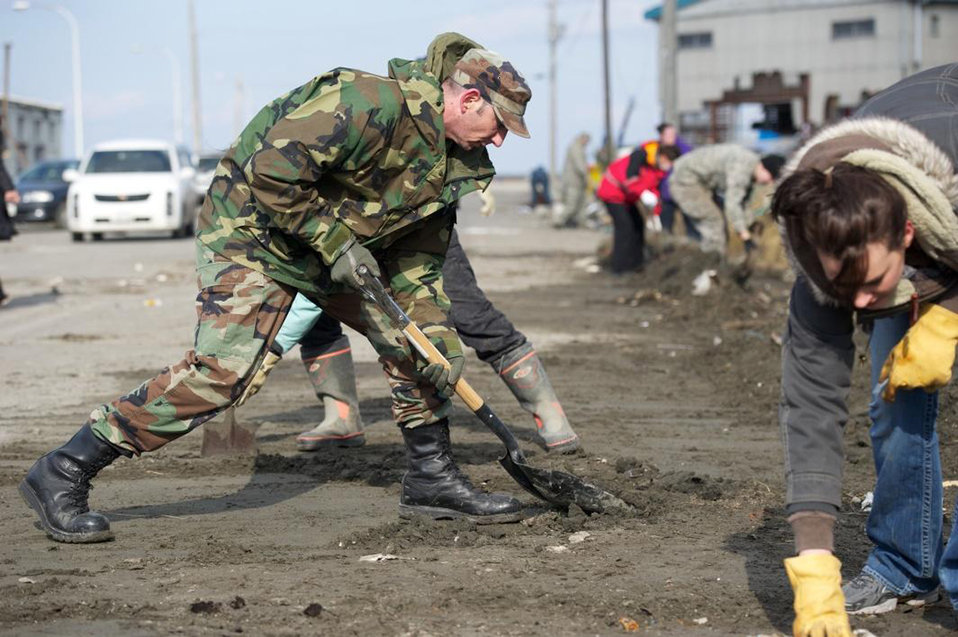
Misawa Air Base Personnel and Family Members help Tsunami-Battered Japanese City

Sgt. Dustin Ogburn from Selah, Wash., assigned to 35th Fighter Wing Operations Support Squadron, along with other base volunteers, shovel sand off the road during a local cleanup effort. More than 50 volunteers from Misawa Air Base assisted with the cleanup at Hachinohe, Japan, following the 9.0-magnitude earthquake that triggered a devastating tsunami on Japan's eastern coastline.